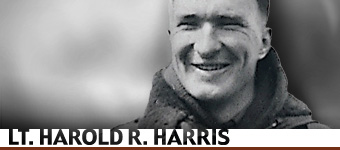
Lt Harold Harris

Lt. Harold R. Harris, the first American pilot to use a parachute and survive in an emergency, history spotlight graphic .